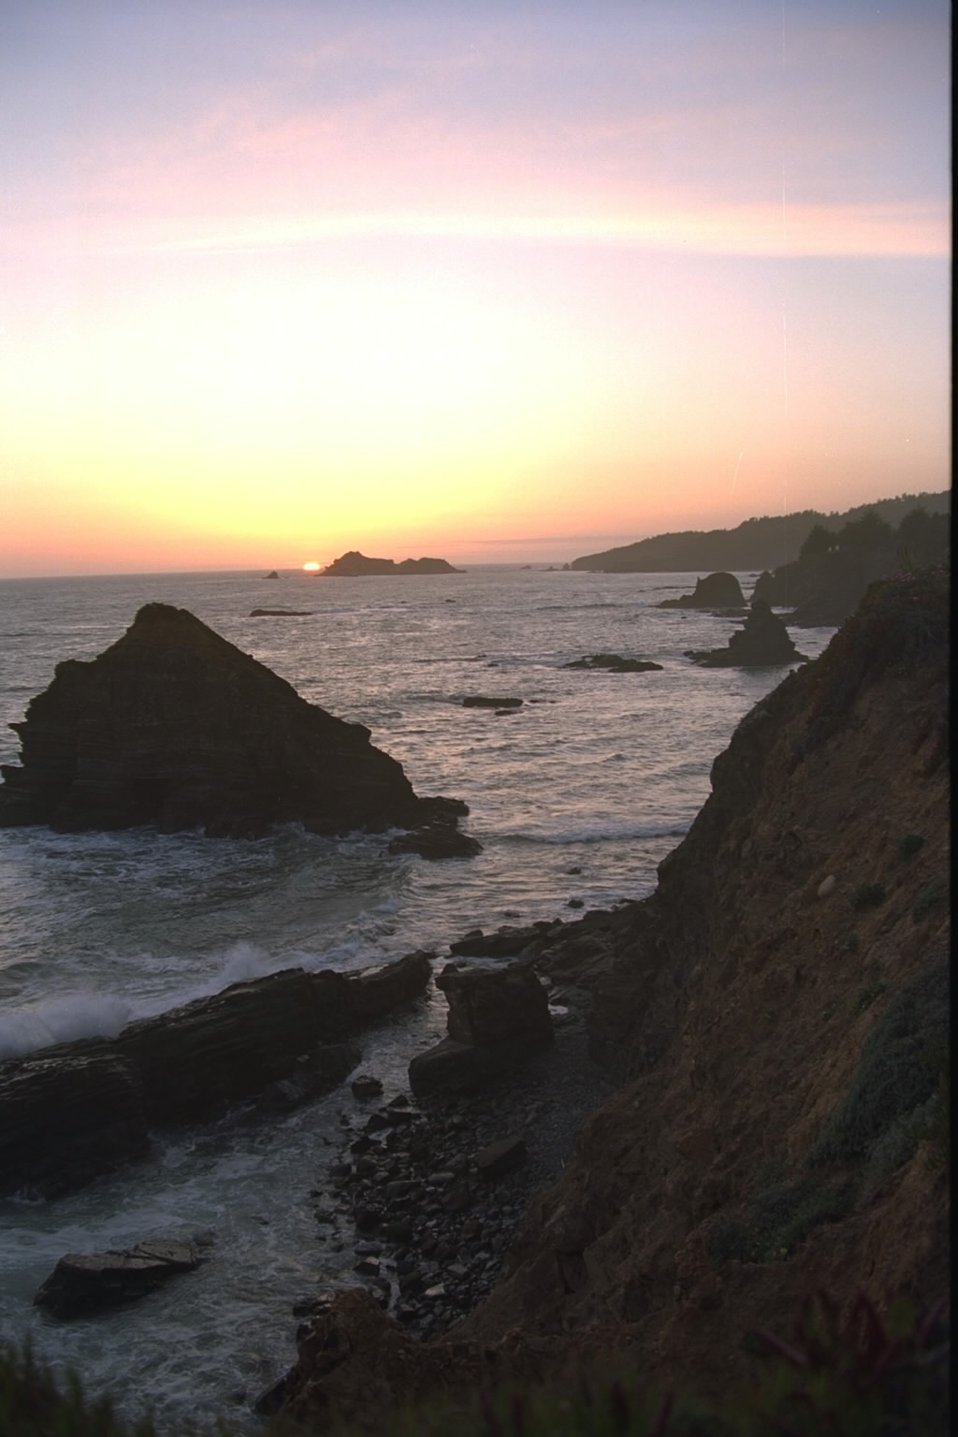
Sunset California coastal national monument